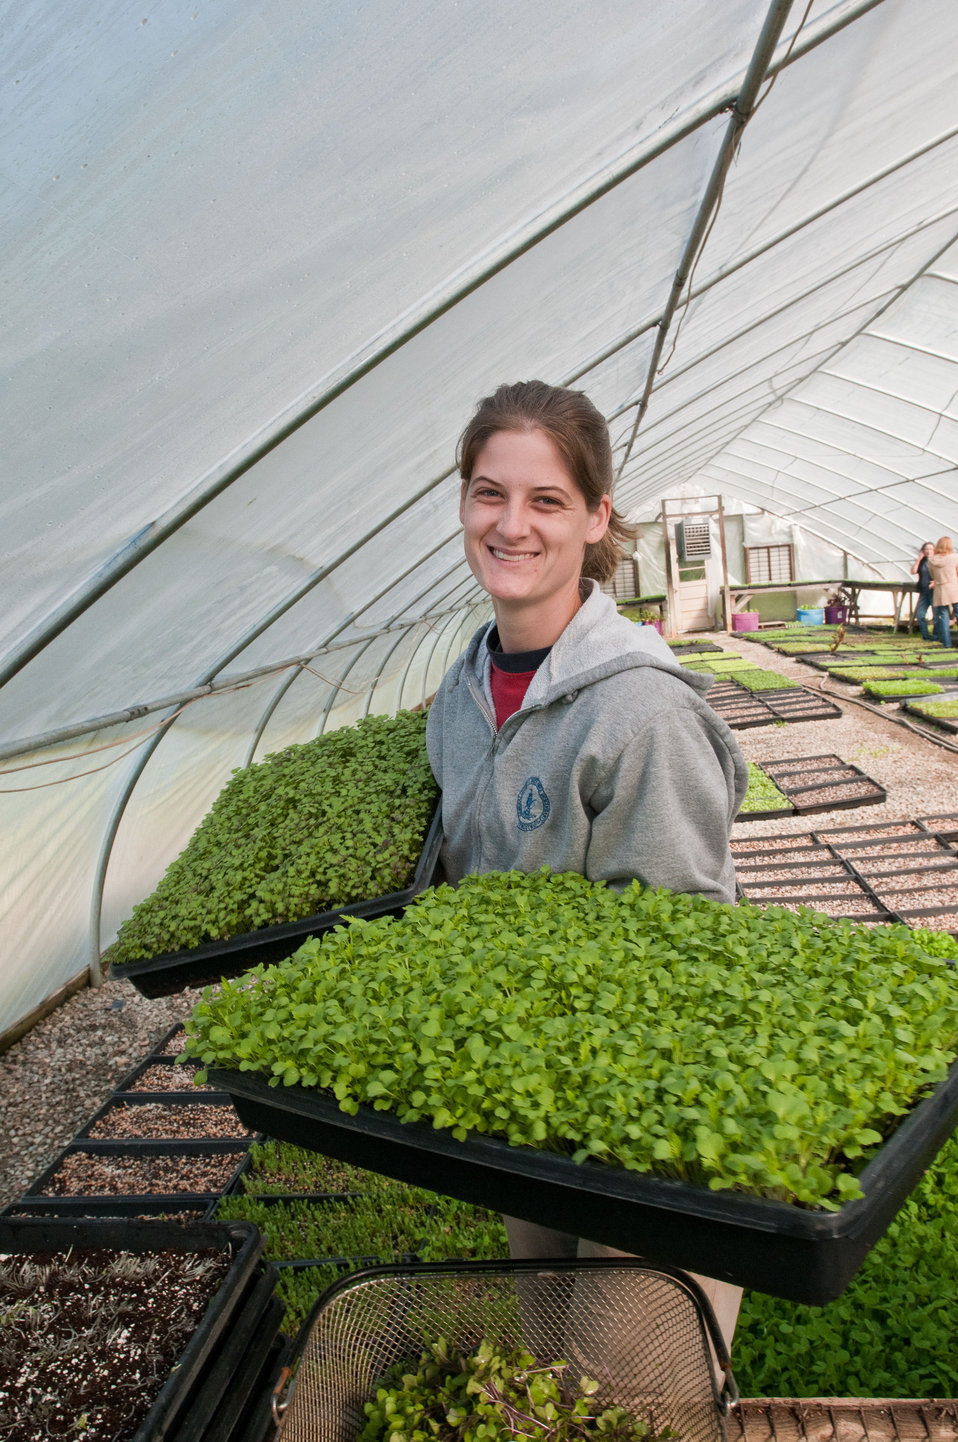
Kate Lainhart harvesting tray after tray of micro greens at Manakintowne Specialty Growers for local resturants on Friday, May 6, 2011. Manakintowne Specialty Growers is a 21-acre farm in Powhatan County, Virginia, The farm raises specialty produce for chefs and markets of Richmond, Charlottesville and Williamsburg, VA area. This includes the online food hub of Lulus Local Food served by the Fall Line Farms cooperative. This is one of the farms that chefs get those seemingly unique greens such as French Sorrel, Pea Shoots, Frisee, Tat soi, Mizuna, Pink/green radish shoots, Sunflower shoots, Baby red mustard, Tuscan Kale, Beet greens. All harvested by hand and scissors. As well as micro greens such as Pak choi, Tat soi, Mizuna, Purple kohlrabi, Shungiku (edible chrysanthemum), Ruby chard, Purple/Daikon/Triton radish, Red amaranth and Bull's Blood Beet. Edible flowers such as African Blue Basil, Nasturtiums, Johnny Jump Ups, and Chive blossoms Dianthus (pinks) are grown here. The seasonal choices are listed by suppliers and ordered by members on Lulus Local Food website, the food is distributed to pick-up points in the Richmond, VA area. They also offer a wide variety of household food staples and specialty fruits, vegetables, meats, soaps, eggs, cheeses, flowers, honey, pastas, sauces, syrups, baked goods, mushrooms, flour and grains from and for the Richmond. VA area.